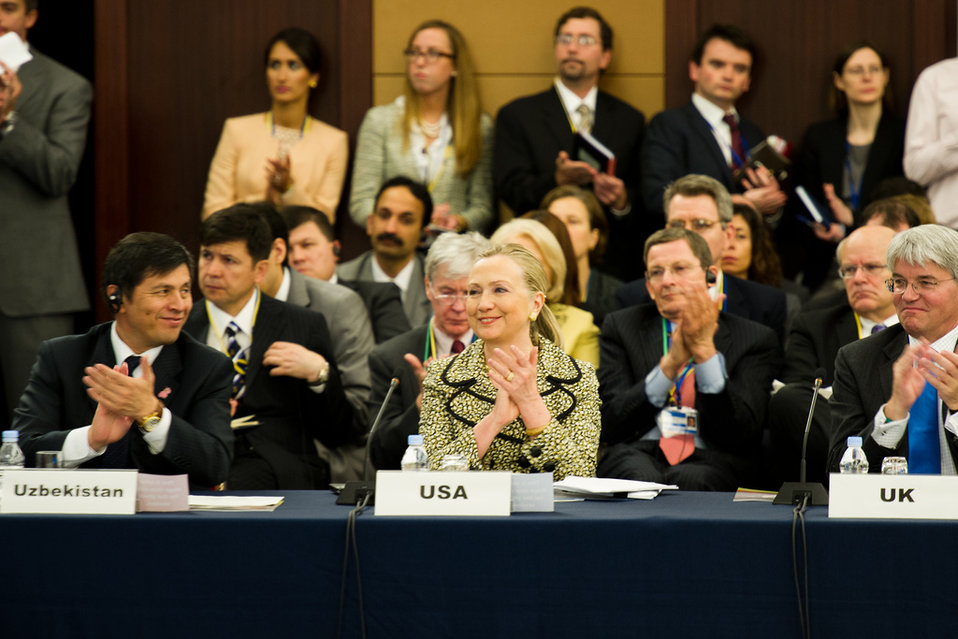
Secretary Clinton Participates in the Tokyo Conference on Afghanistan

U.S. Secretary of State Hillary Rodham Clinton participates in the Tokyo Conference on Afghanistan in Tokyo, Japan, on July 8, 2012.